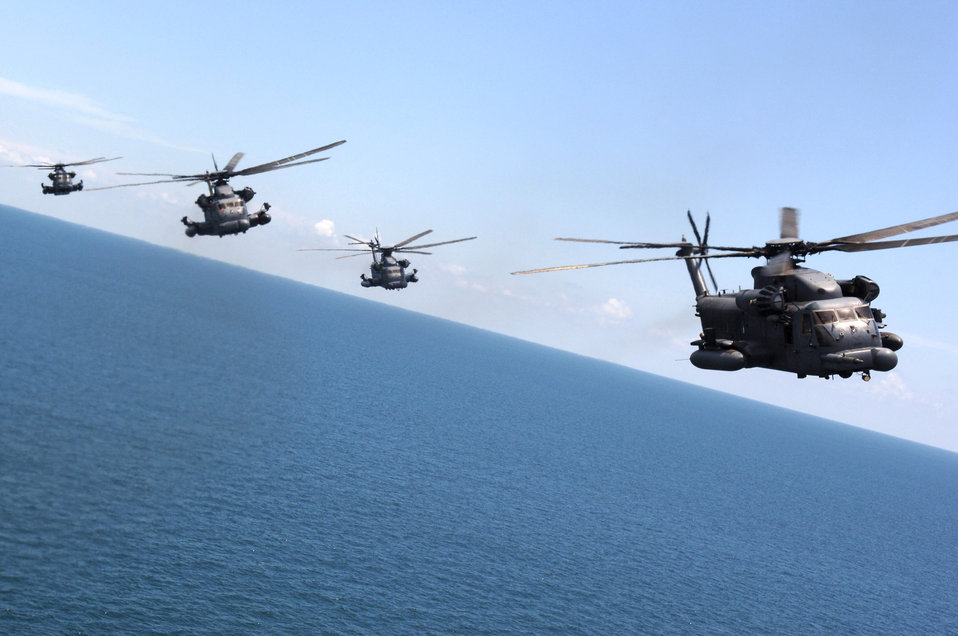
Fly high, pave low

MH-53 Pave Low helicopters from the 20th Special Operations Squadron at Hurlburt Field, Fla., fly over a live-fire range June 12 at Eglin Air Force Base, Fla. The projected map display enables the crew to follow terrain contours helping them to avoid obstacles in adverse weather, making low-level tactical penetration possible.